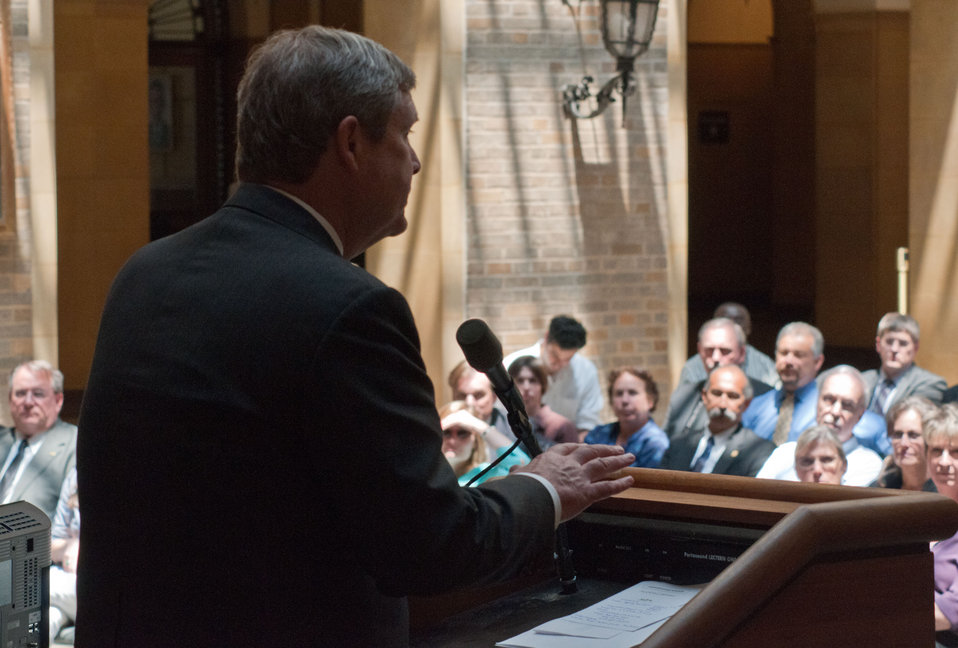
U.S. Department of Agriculture Secretary Tom Vilsack spoke about the Forest Service important role within USDA and about the recently published Watershed Condition Framework (May 2011) at the International Year of Forests (IYOF) celebration on Friday, June 3, 2011 on the Patio of the Whitten Building, Washington, DC.